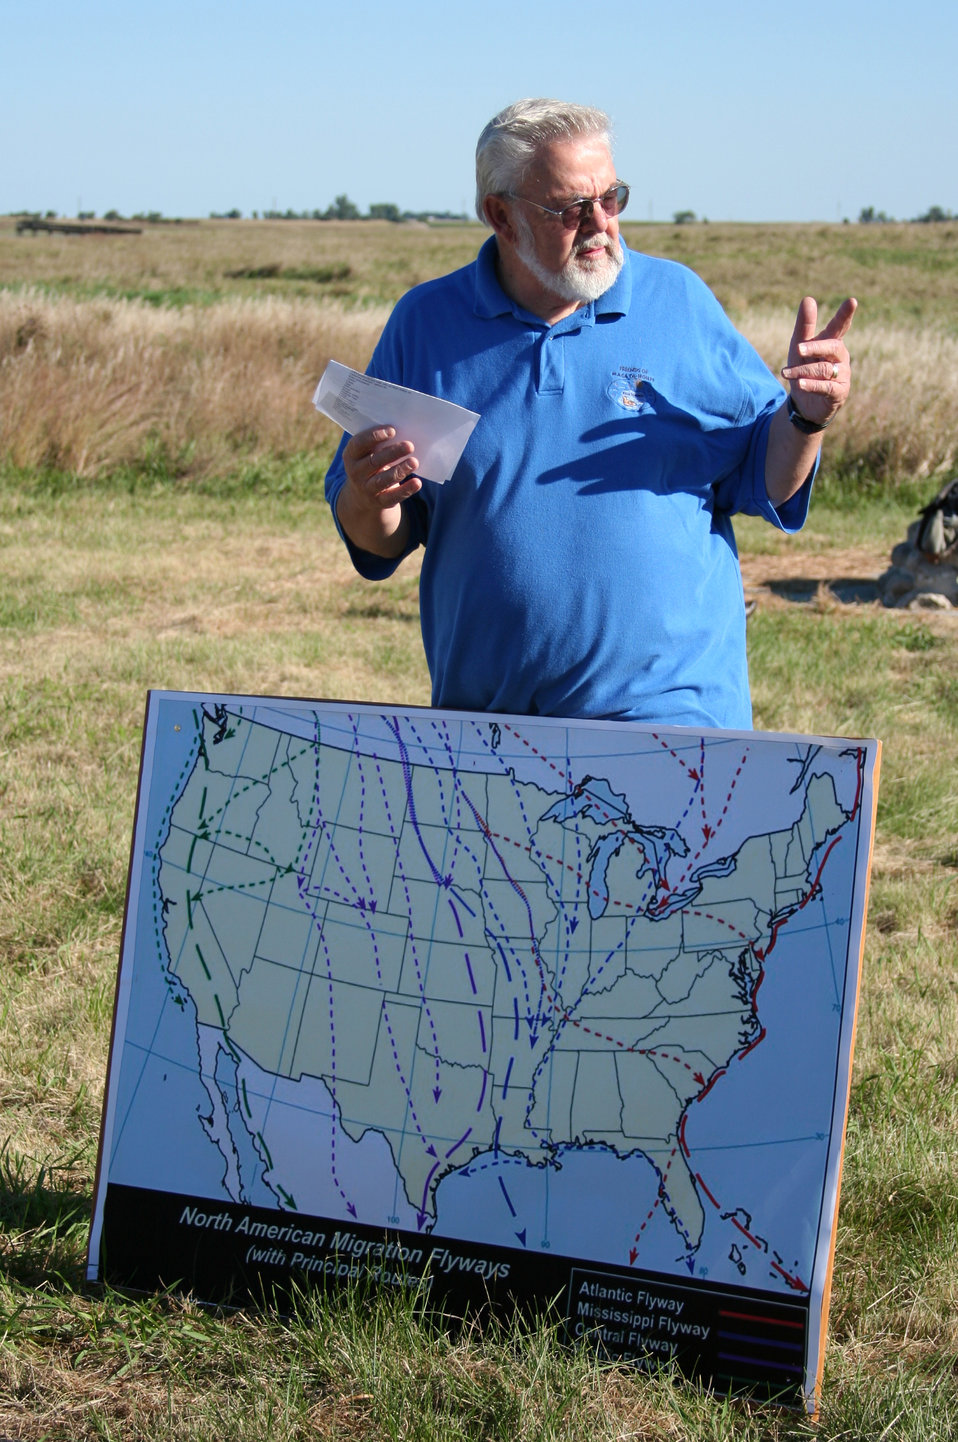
Kites N Flight 2010

Volunteer Frank Amundson giving a talk about the duck stamp, and bird migration.